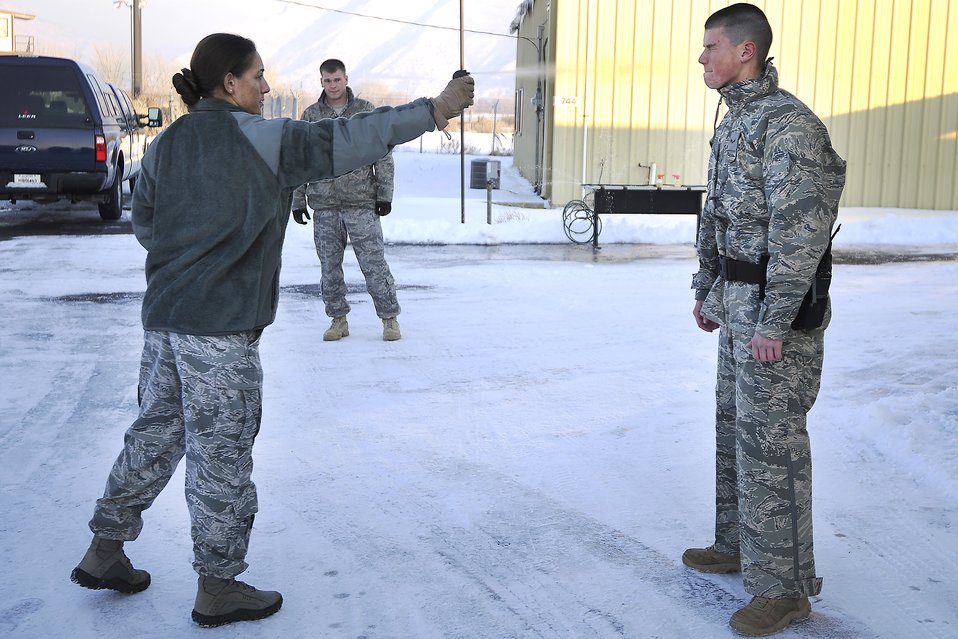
Oleoresin Capsicum spray training

Staff Sgt. Brittany Howard sprays Airman 1st Class Zachary Breeden in the face with Oleoresin Capsicum spray Jan. 5, 2011, at Hill Air Force Base, Utah. OC spray is a non-lethal spray, similar to pepper spray, used to temporarily incapacitate individuals. All security forces Airmen receive the OC training when they first arrive at their squadron. Sergeant Howard and Airman Breeden are assigned to the 75th Security Forces Squadron.